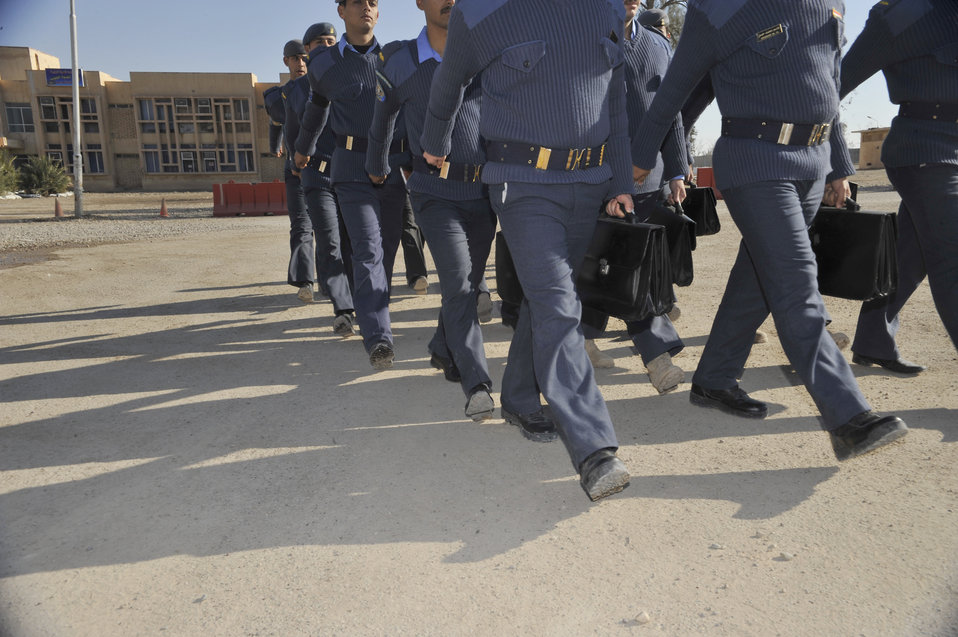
Iraqi Air Force College

Cadet pilots at the Iraqi Air Force College march to class outside an academic building on the school's campus in Tikrit, Iraq. Students began training in September 2010, as part of the first class at the recently reopened academy.